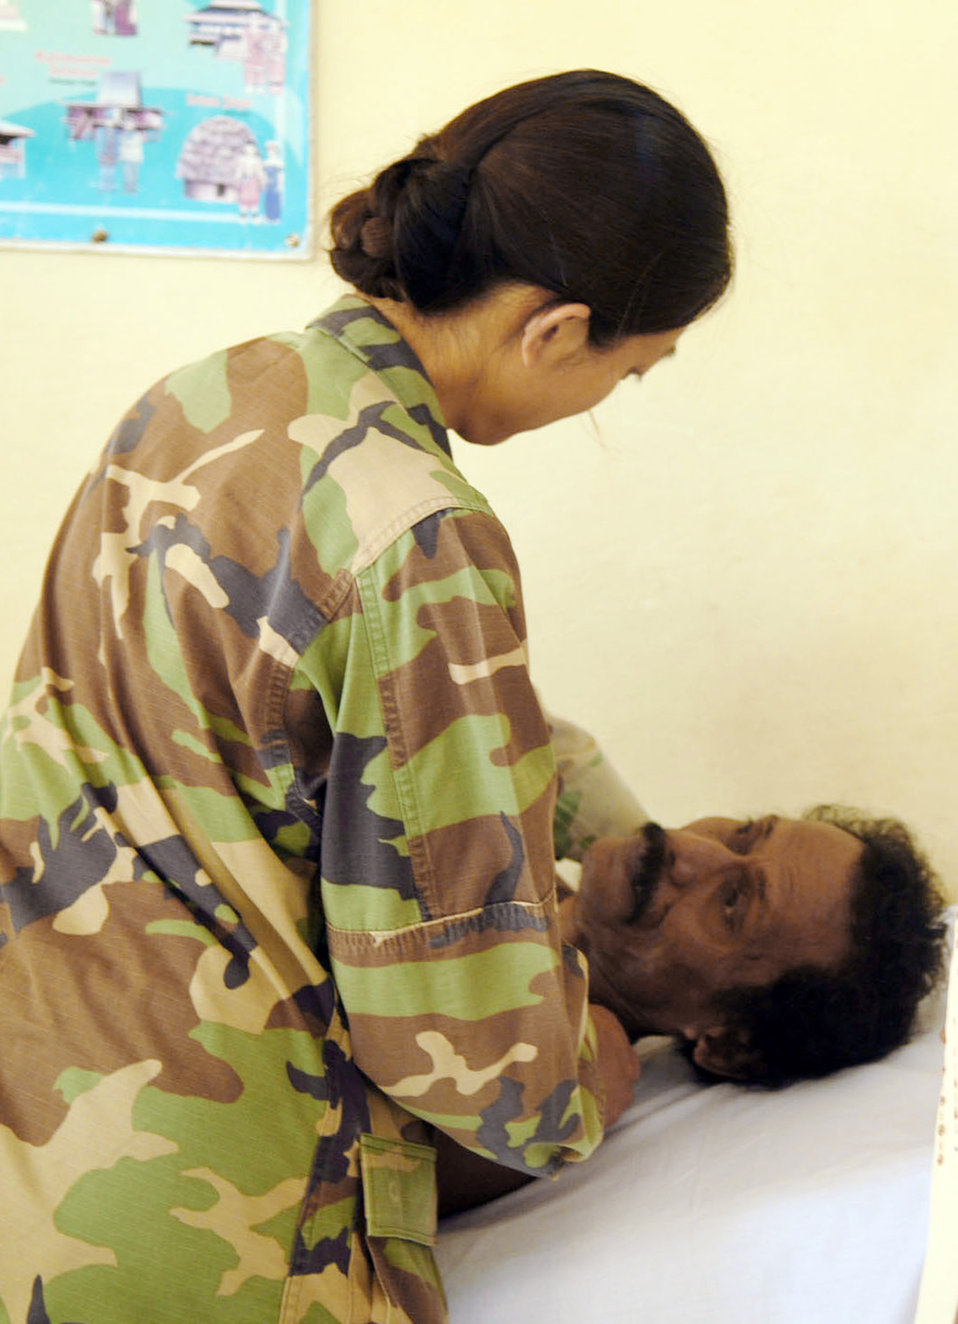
Airmen open medical clinic in Indonesia

Maj. Cladine Ward checks on an elderly patient at a clinic as part of Operation Pacific Angel 2009 July 16 in Naioni, Indonesia. Major Ward is a general medicine doctor assigned to the Uniformed Services University of the Health Sciences in Bethesda, Md. U.S. and Indonesian military medical professionals, one local doctor, and six interpreters worked side-by-side at the clinic to treat patients as part of Operation Pacific Angel 2009. During the first day, the clinic staff saw 329 patients.